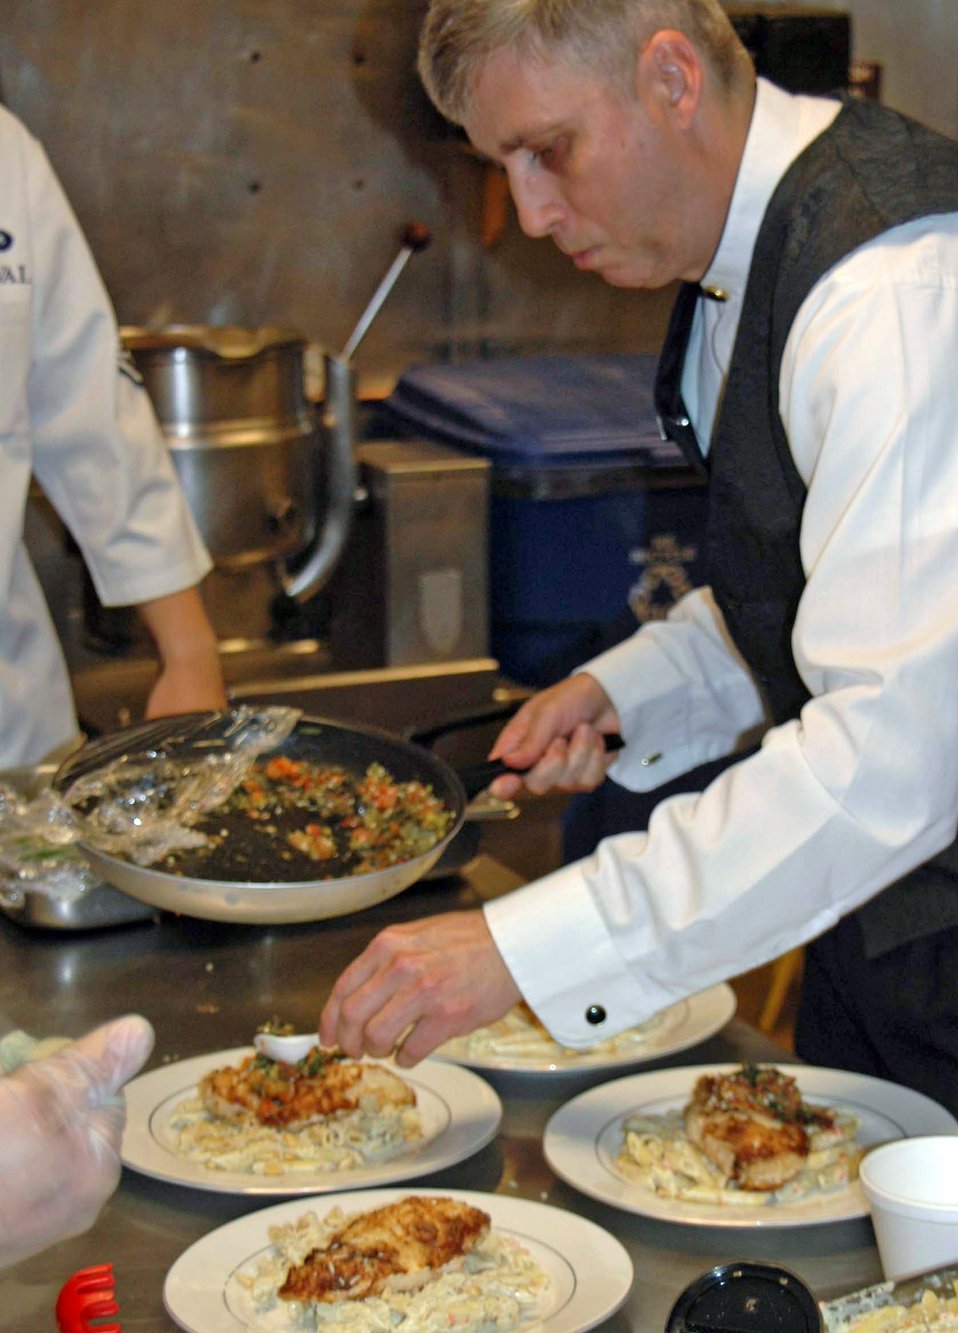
Ellsworth Airman to appear on 'Emeril Live'

Tech. Sgt. Wesley Williams garnishes a dish at the Bandit Inn at Ellsworth Air Force Base, S.D. Sergeant Williams will be featured on the Food Network's